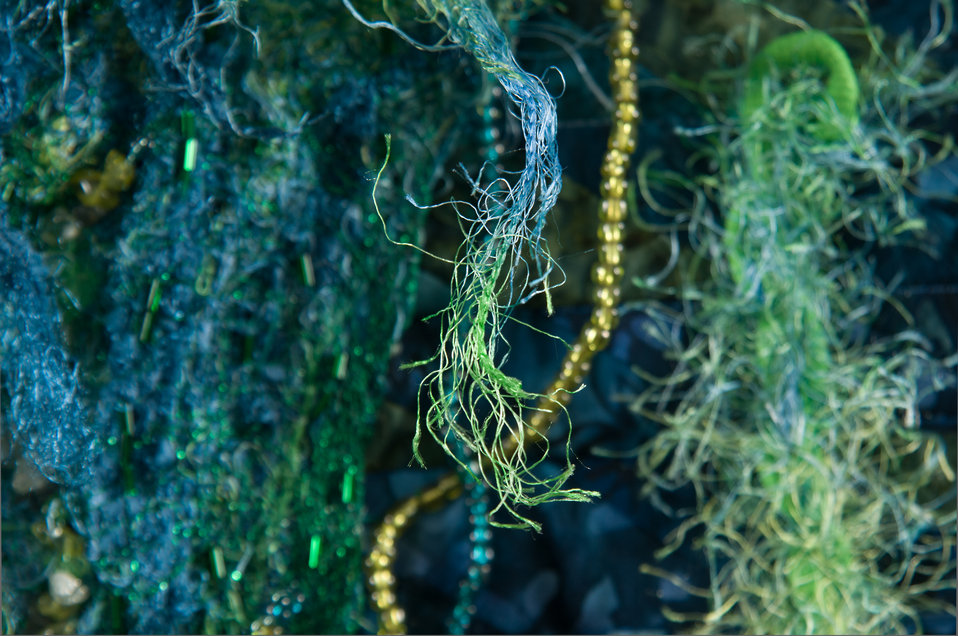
Online Viewer's Choice entries of the 2013 Art & Agriculture, Tuesday, July 9, 2013, in the South Building, Washington, D.C. Themes were expressed by employees from across the department and the contest was open to full-time and part-time USDA employees. Winning artwork will be displayed till the end of the year. U.S. Artistic expression is a creative outlet that is vital for an individual to grow and develop.